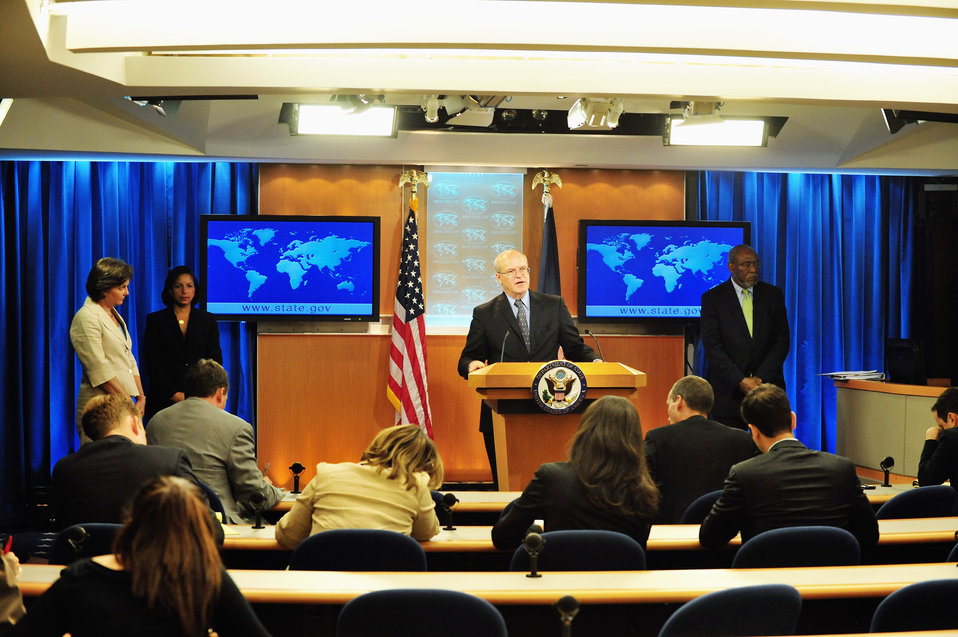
USAID Deputy Administrator Steinberg Addresses Reporters

USAID Deputy Administrator Don Steinberg, at the podium, addresses reporters in a special press briefing on the New Republic of South Sudan, at the U.S. Department of State in Washington, D.C., on July 7, 2011. He was joined by U.S. Permanent Representative to the United Nations, Ambassador Susan Rice, second from left; and Assistant Secretary of State for African Affairs Johnnie Carson, right.